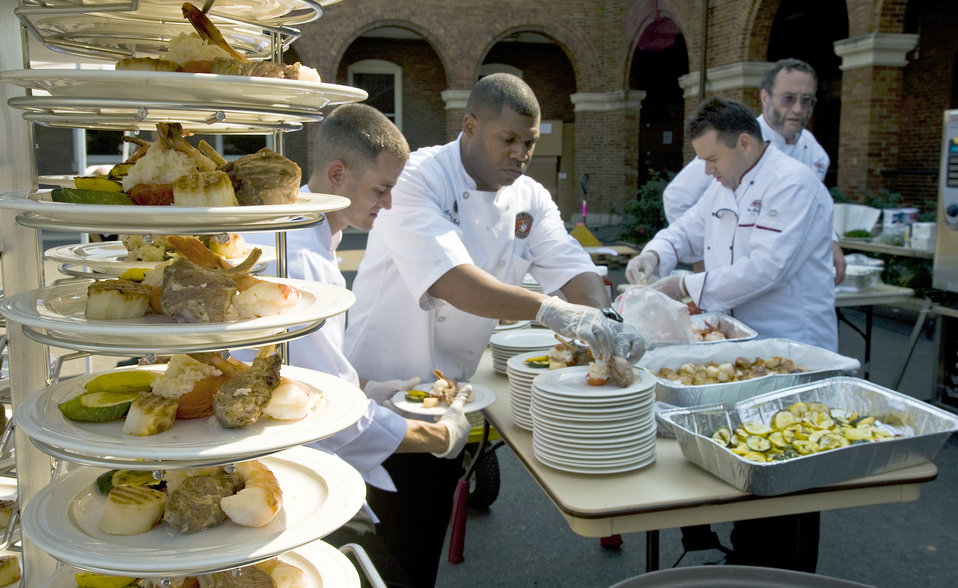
7th Annual Military Culinary Competition

Military food service specialists prepare plates for a kick-off luncheon at the 7th Annual Military Culinary Competition Sept. 24, 2010, in Washington, D.C.